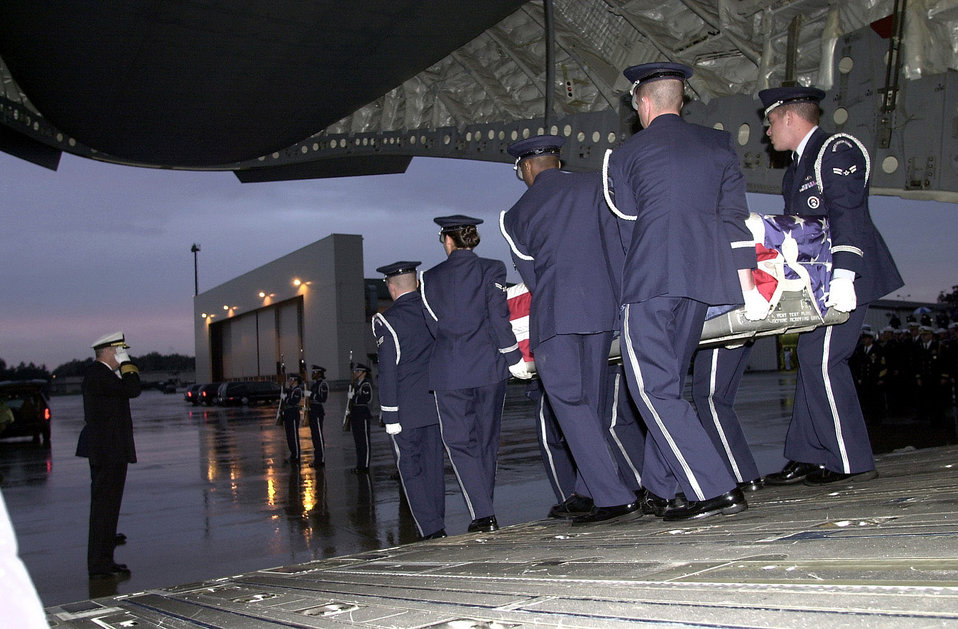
Sailor Returned Home

RAMSTEIN AIR BASE, Germany -- Honors are rendered as the remains of five sailors killed in an apparent attack on the USS Cole are escorted from a C-17 Globemaster III here Oct. 13, 2001. The Navy destroyer was in the port of Aden, Yemen, when the incident occurred.